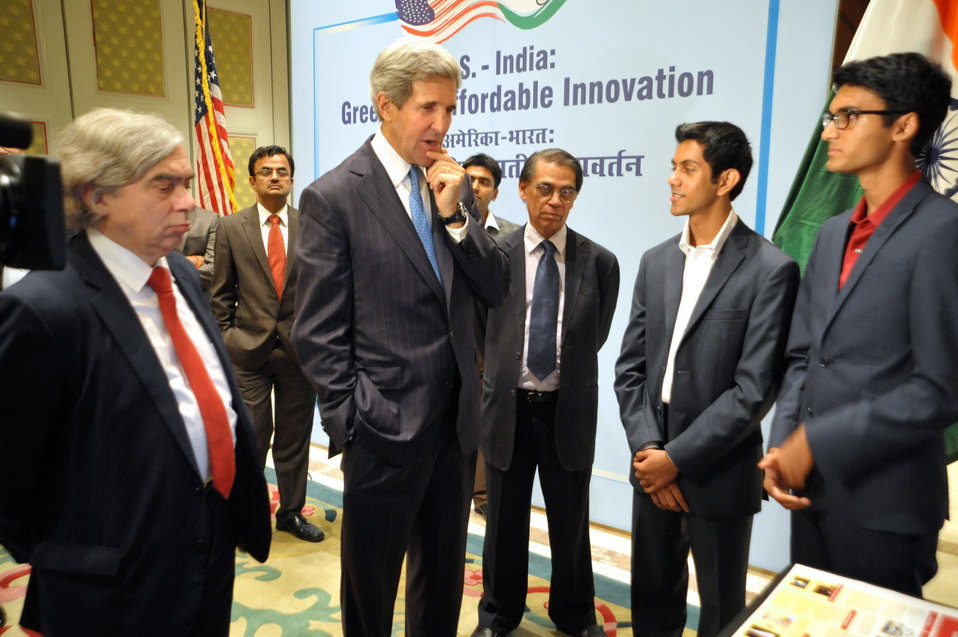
Secretary Kerry Attends an India Tech Expo

U.S. Secretary of State John Kerry and U.S. Secretary of Energy Ernest Moniz meet with a pair of high school entrepreneurs during an expo focused on clean energy and technology products in New Delhi, India, on June 24, 2013.